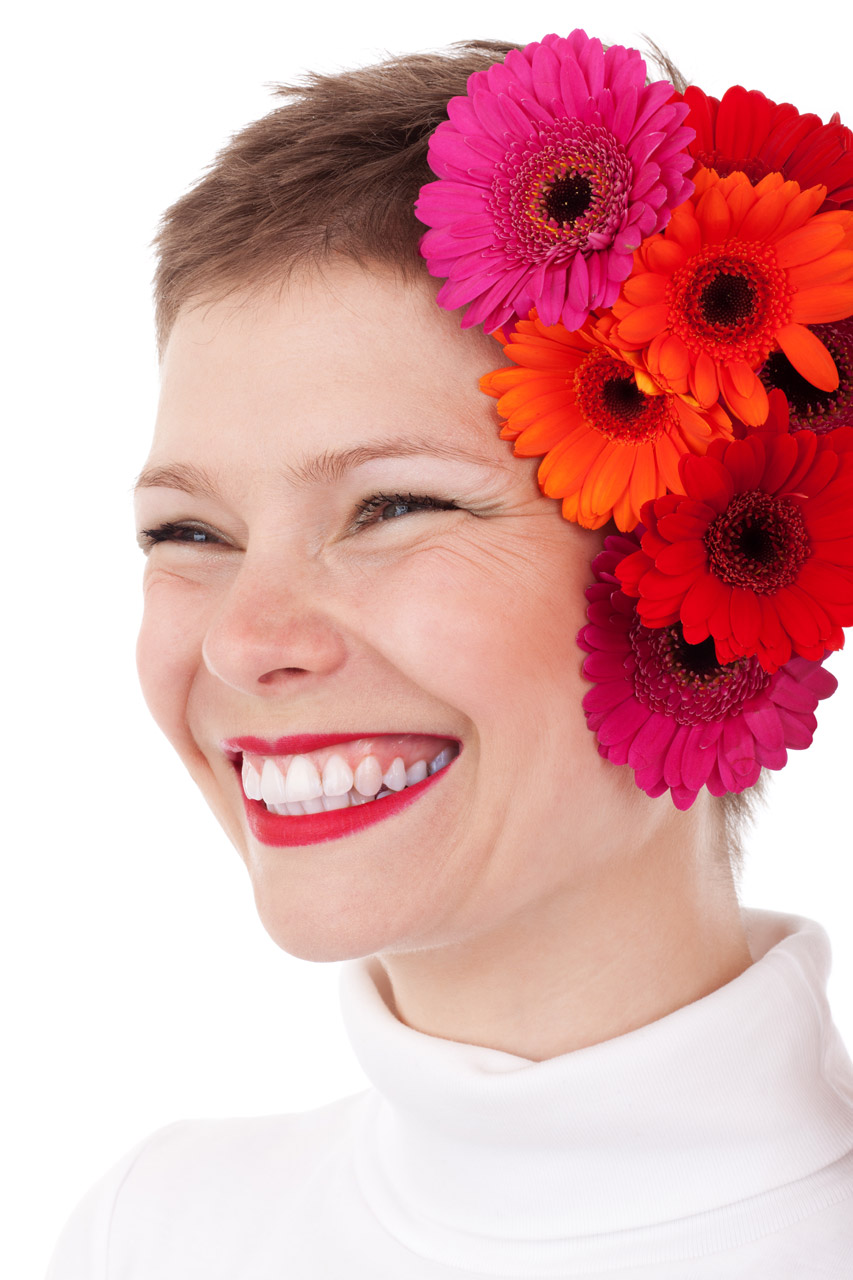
Woman with flowers in hair

Young smiling woman with flowers in her hair isolated on white background.